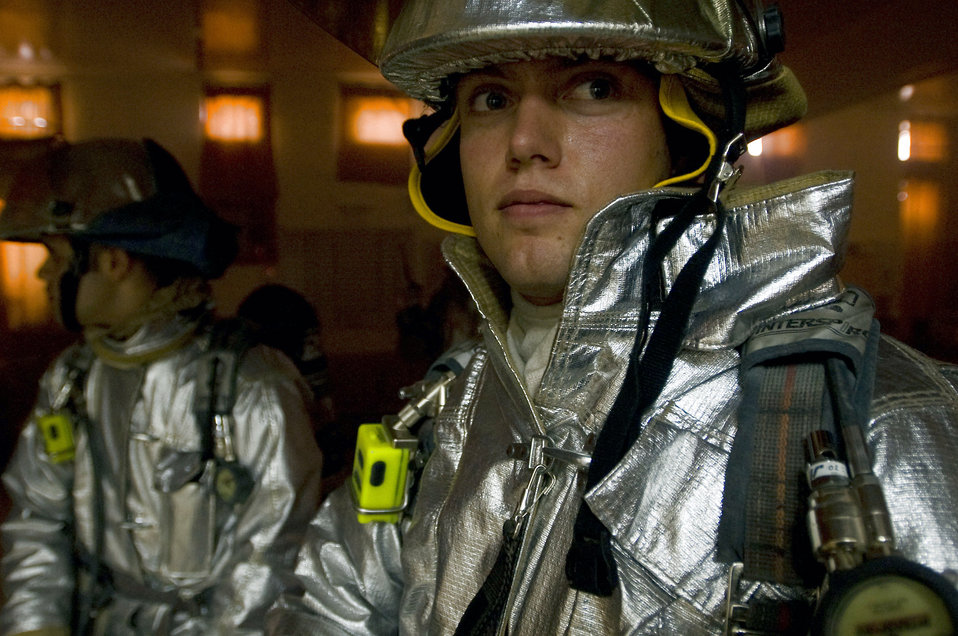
Practice makes perfect

Senior Airman Nathan Sole scans a room for fire hazards during firefighter training Oct. 3 at Ali Base, Iraq. The 407th Expeditionary Civil Engineer Squadron's fire department held a structural drill to evaluate its response to fire alerts. Airman Sole, a firefighter with the 407th ECES, is deployed from the Minnesota Air National Guard's 133rd Airlift Wing.